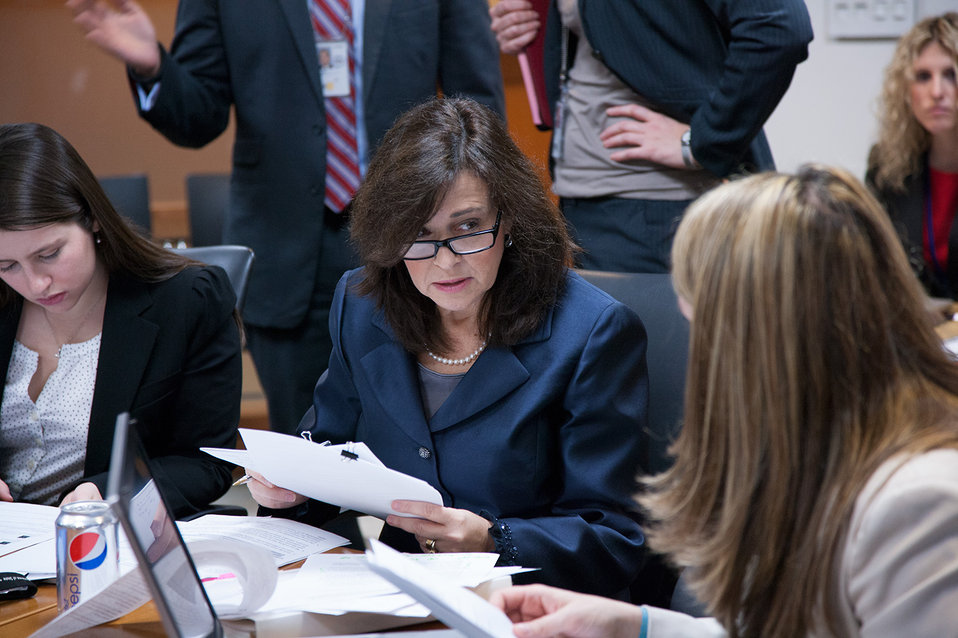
Under Secretary Sonenshine Participates in a Global Twitter QandA

Under Secretary of State for Public Diplomacy and Public Affairs Tara Sonenshine, @TSonenshine, participates in a Global Twitter Q and A on December 5, 2012.